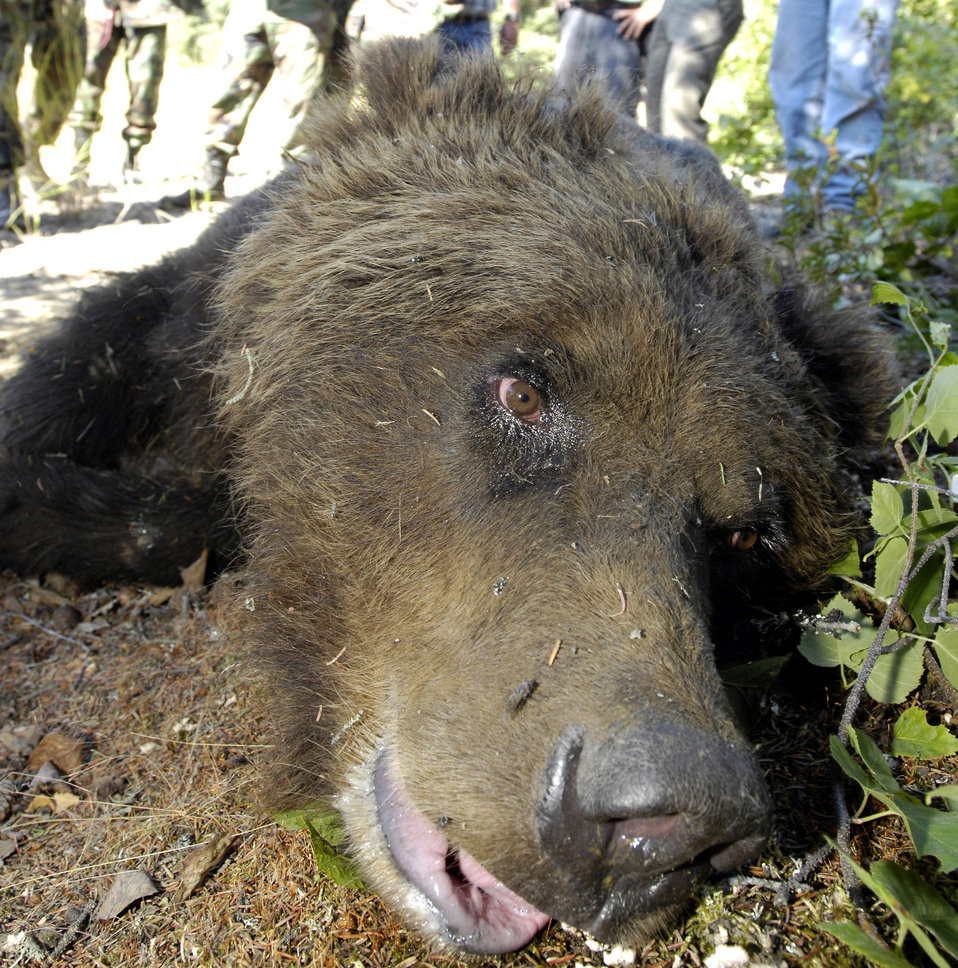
Unbearable time at Elmendorf

A brown bear that was trapped and tranquilized begins to wake up July 17 at Elmendorf Air Force Base, Alaska. Elmendorf AFB's military conservation agents and the Alaska Department of Fish and Game took DNA, blood and hair samples, measurements and fit the bear with a tracking collar that will allow the bear's movements to be monitored by global positioning satellites. The bear, a female around 6 years old and weighing more than 400 pounds, had been spotted near the base golf course and a barrel trap was set by base conservation agents. After trapping and collaring the bear, agents relocated the bear to a remote part of the base and monitored it from a distance until the bear woke and moved into the woods. The Department of Defense funded a study through the ADF&G to monitor the movement of brown bear on Elmendorf AFB and nearby Fort Richardson.